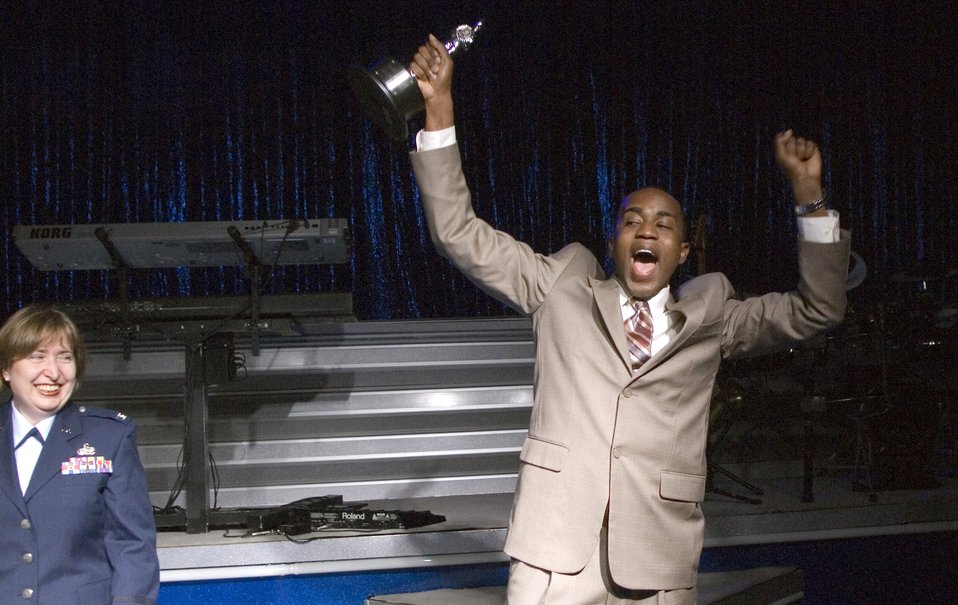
Airmen named the 'Best of the Best'

Corey Sims wins best vocalist and best in show in the Tops in Blue Worldwide Talent Competition at Lackland Air Force Base, Texas, Dec. 10.